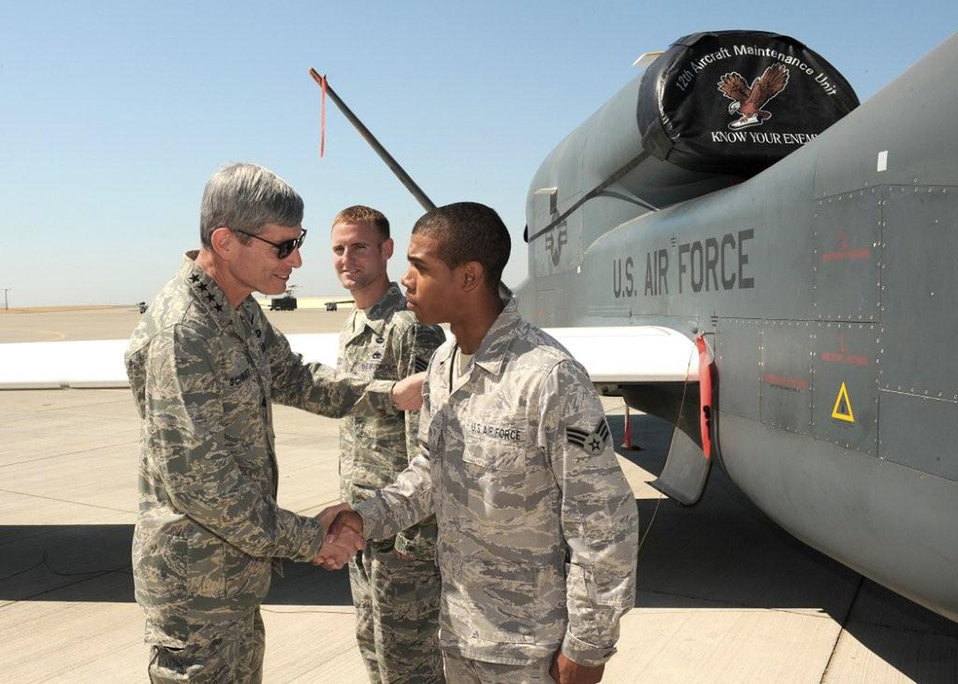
CSAF visits Beale

Air Force Chief of Staff Gen. Norton Schwartz greets Senior Airman Keon Miller and Staff Sgt. Jonathan Leloux (rear) Aug. 21 during his visit to Beale Air Force Base, Calif. Airman Miller is an RQ-4 Global Hawk crew chief. Sergeant Leloux is a Global Hawk avionics system technician.